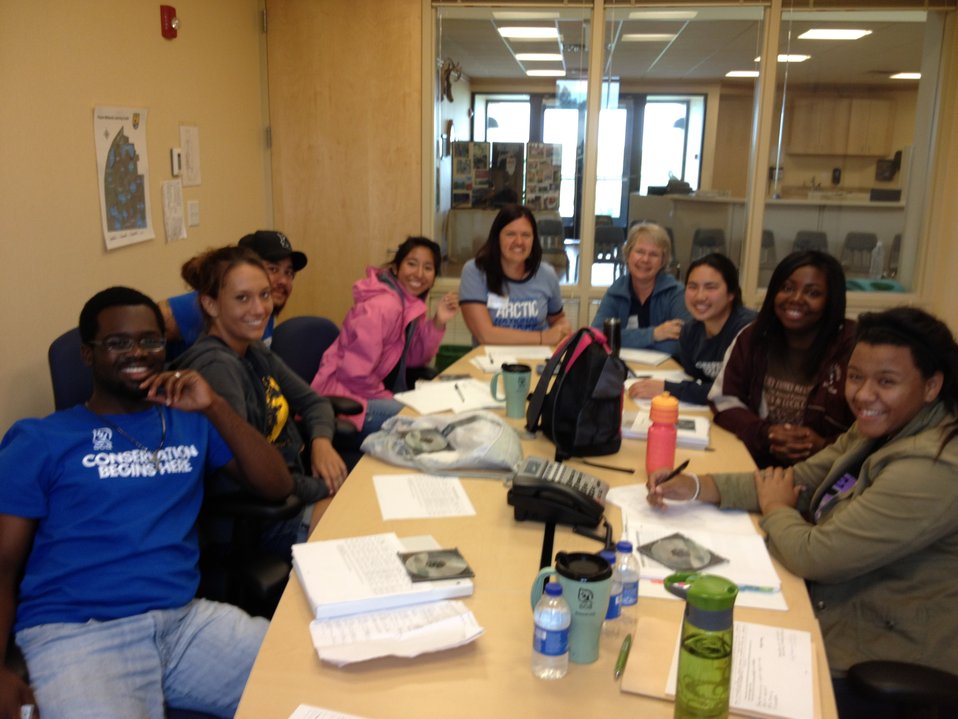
2012-Alaska Region-Work(01)

Alaska Career Discovery Program in Partnership with the Student Conservation Association